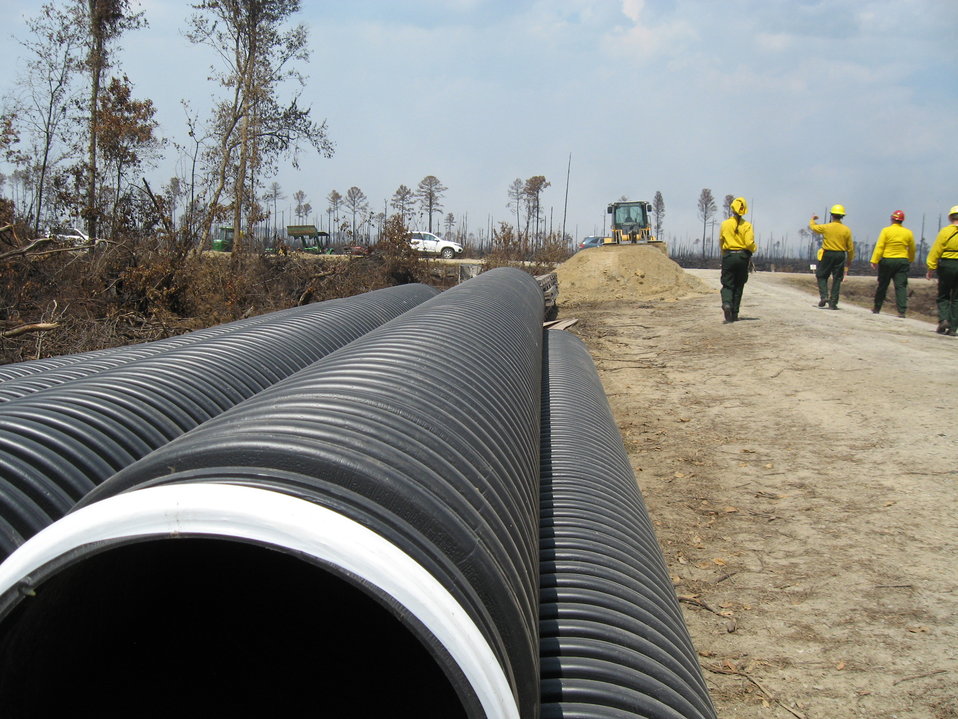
The long view

Suffolk, VA, August 2011: Delivering water to all areas of the 6,300 -acre Lateral West Fire on Great Dismal Swamp National Wildlife Refuge was a feat in pumping, plumbing, and road construction.